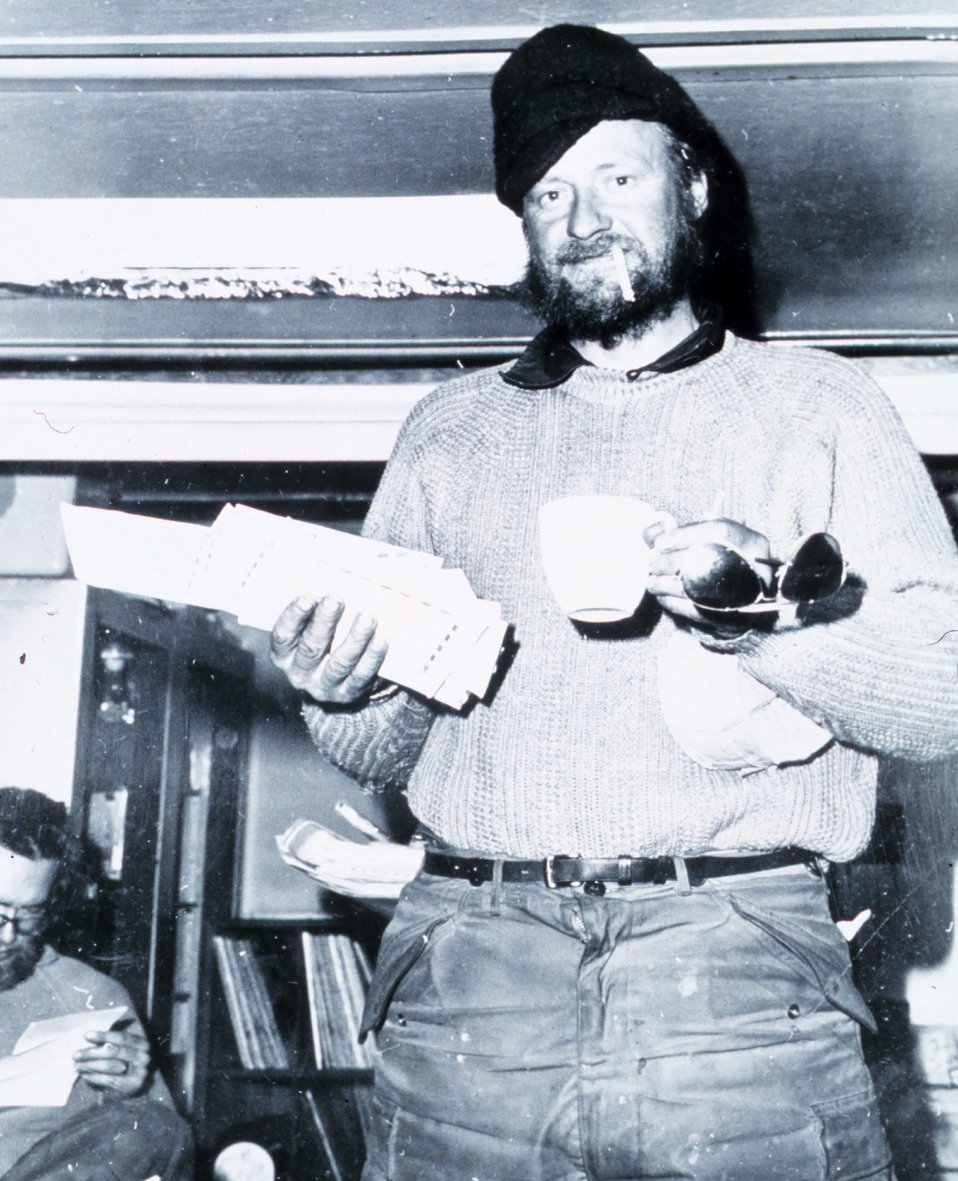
Ardo X. Meyer, traverse navigator and geomagnetic observer, celebrating at South Pole Station after completing traverse and two months on the ice cap. McMurdo Station to South Pole traverse